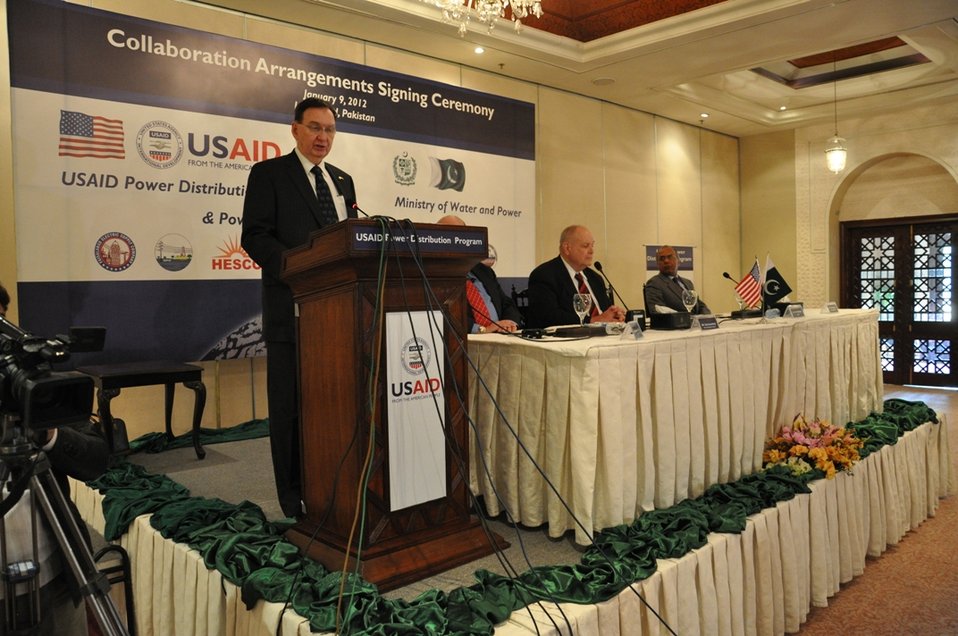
John Morgan, Director of the United States Agency for International Development (USAID) Energy Office speaks at the Collaboration Arrangements Signing Ceremony

“Every customer wants a reliable and sufficient power supply. By improving the collection of energy bills, DISCOs will have more money to pay for power generation, thus reducing load-shedding in the country. Similarly, reduced losses will translate to more reliable power supply and fewer unscheduled outages,” said John Morgan, Director of the United States Agency for International Development (USAID) Energy Office, speaking at the signing ceremony.